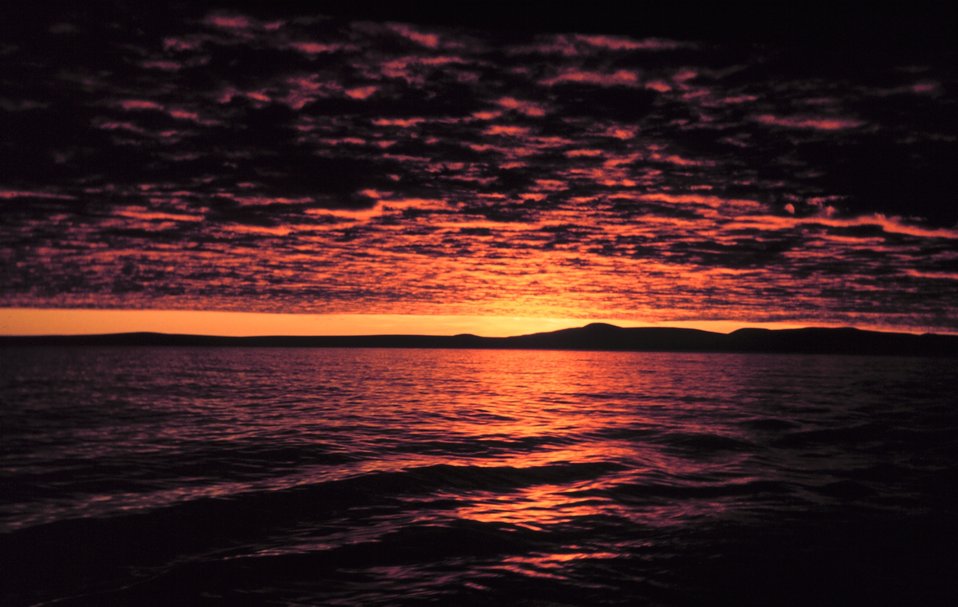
A Bering Sea sunset from the Bureau of Commercial Fisheries Ship BROWN BEAR.